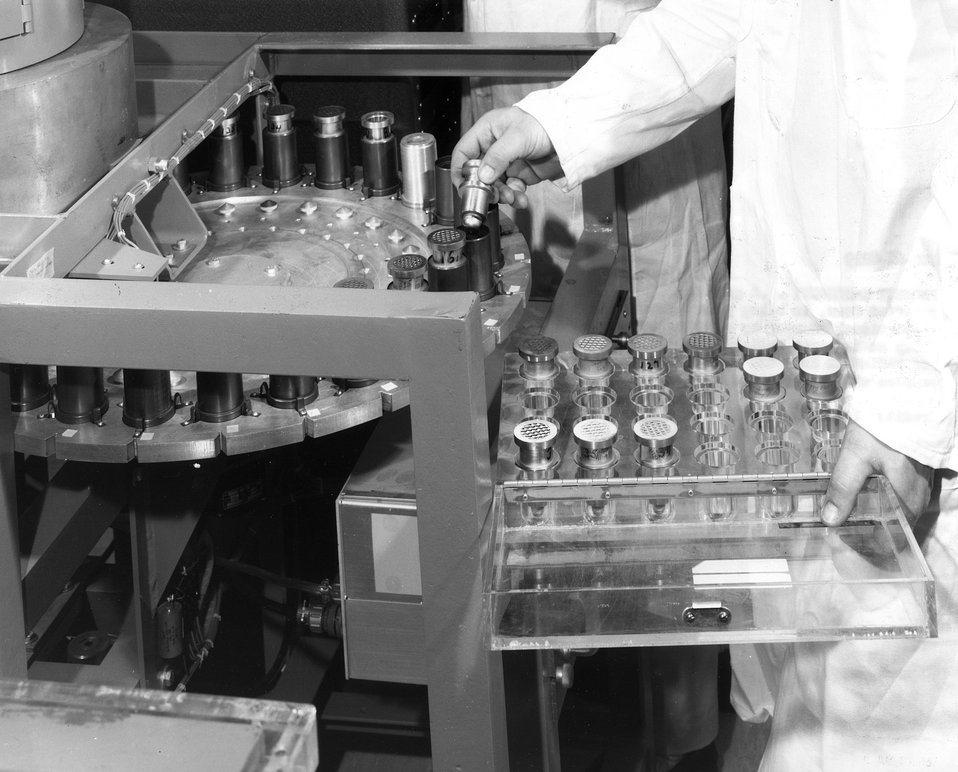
A gas sample, isolated in highly purified form, is being placed into a rotating beta proportional counter by a member of the Gas Analysis Group at Lawrence Radiation Laboratory, Livermore. The radiation from the nuclides in the Gasbuggy samples will be recorded and checked. Circa 1968.